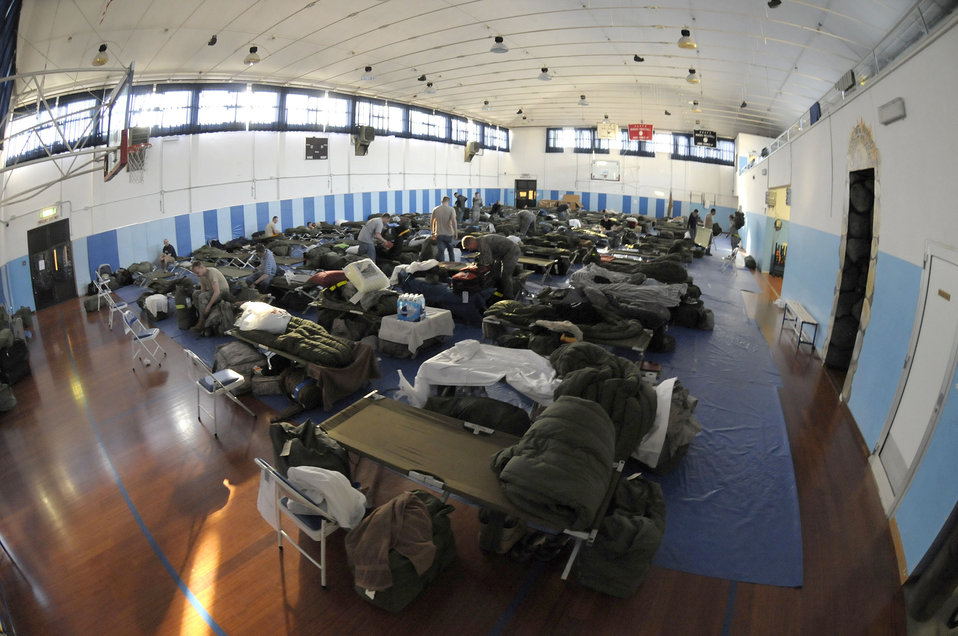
Airmen deploy to Aviano

Service members temporarily reside at the fitness center at Aviano Air Base, Italy, March 22, 2011, while deployed there in support of Operation Odyssey Dawn.